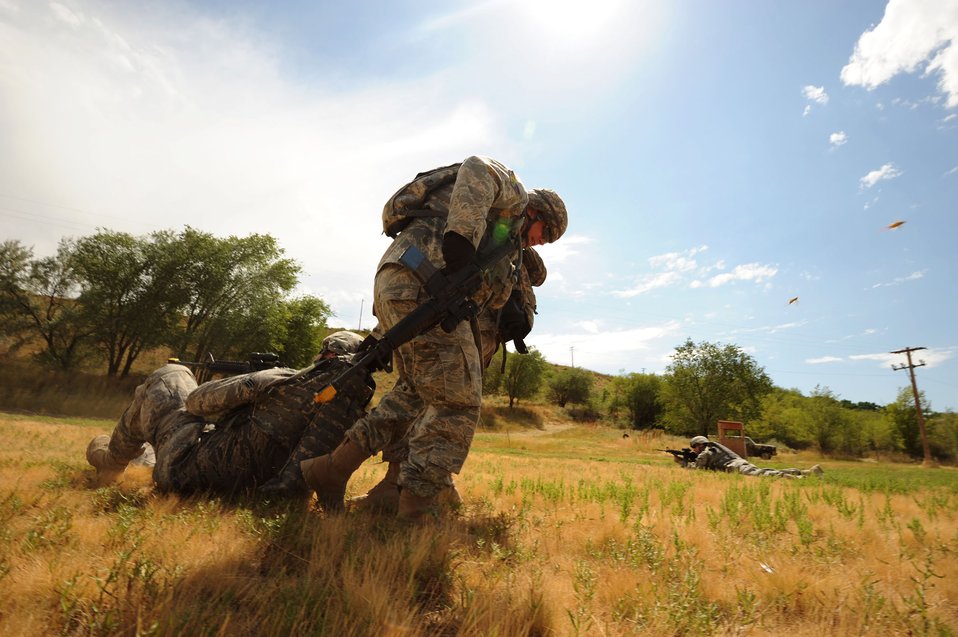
Security Forces Airmen take part in combat skills training

Staff Sgt. Jesse Peterson and Senior Airman Aaron Davis transport Senior Airman Andrew Hlavacek to a safe location during a 7-day combat skills training course Aug. 27, 2010, at Hill Air Force Base, Utah. The training focused on individual skills, self-aid and buddy care and encountering staged scenarios with hostile forces.